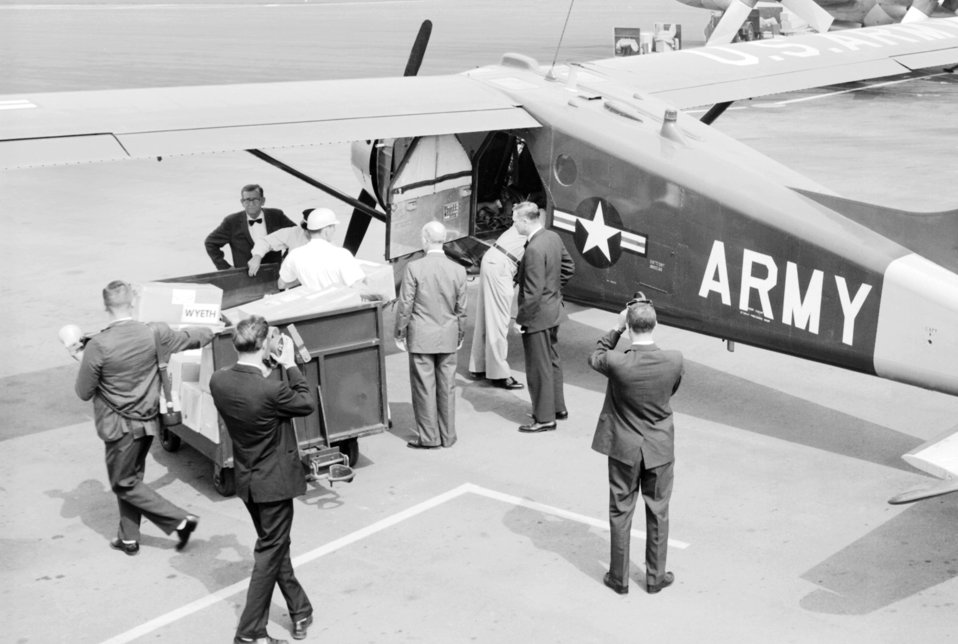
The Alabama National Guard prepares to fly polio vaccine from Birmingham to Haleyvilled during the epidemic of 1963.